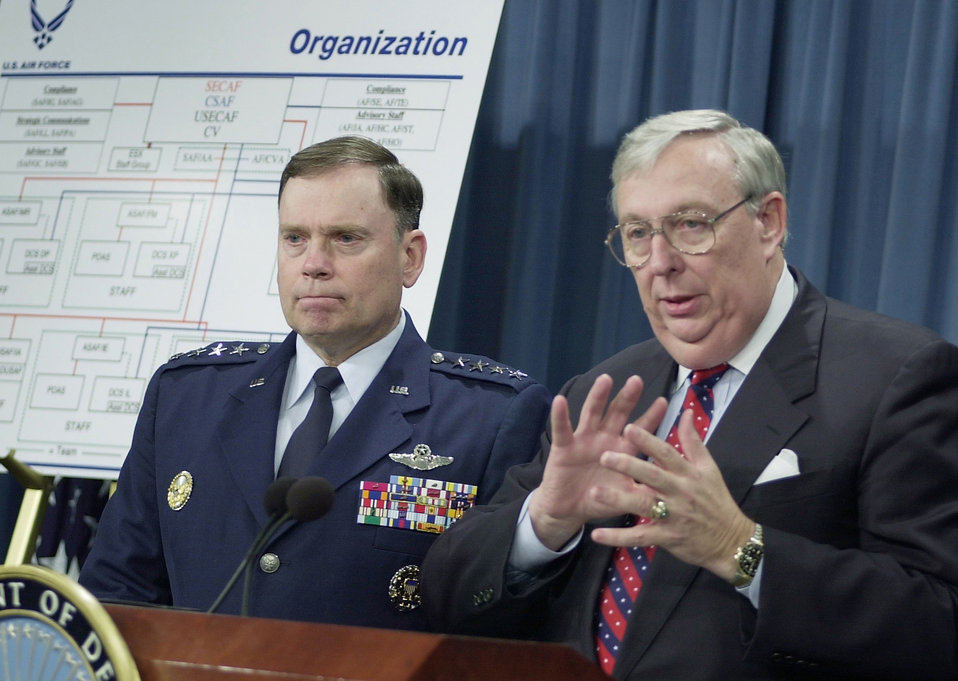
Roche and Jumper

WASHINGTON -- Secretary of the Air Force Dr. James G. Roche (right) and Air Force Chief of Staff Gen. John P. Jumper announce a new initiate to transform Headquarters Air Force into a more streamlined and effective organization on Dec. 18. The goal of the reorganization is to improve business processes and eliminate unnecessary bureaucratic duplication and oversight.